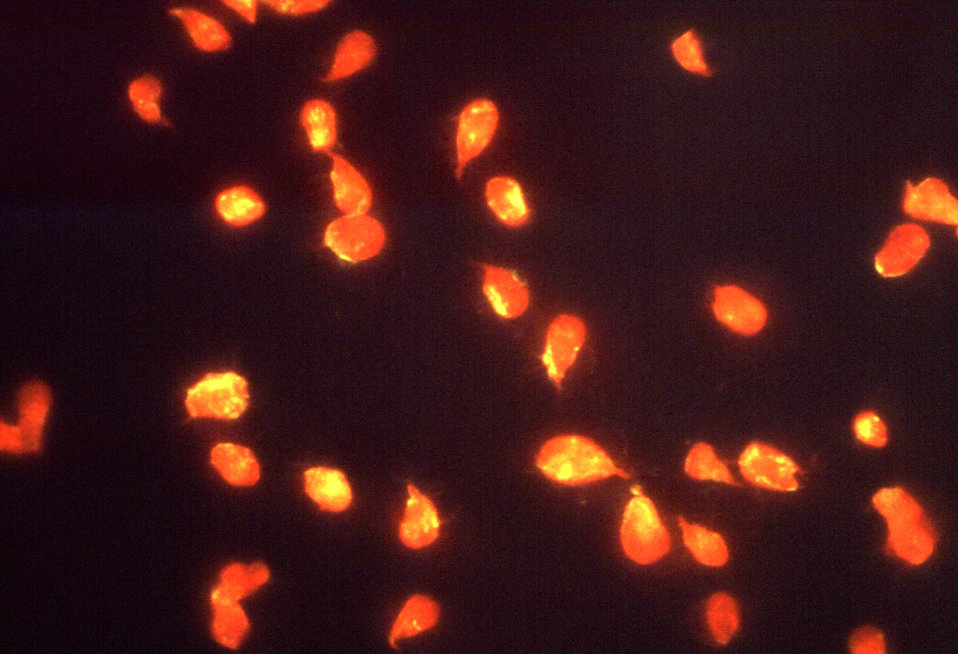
Using positive indirect immunofluorescence, this test reveals the presence of Giardia lamblia in a 1:64 serum dilution.